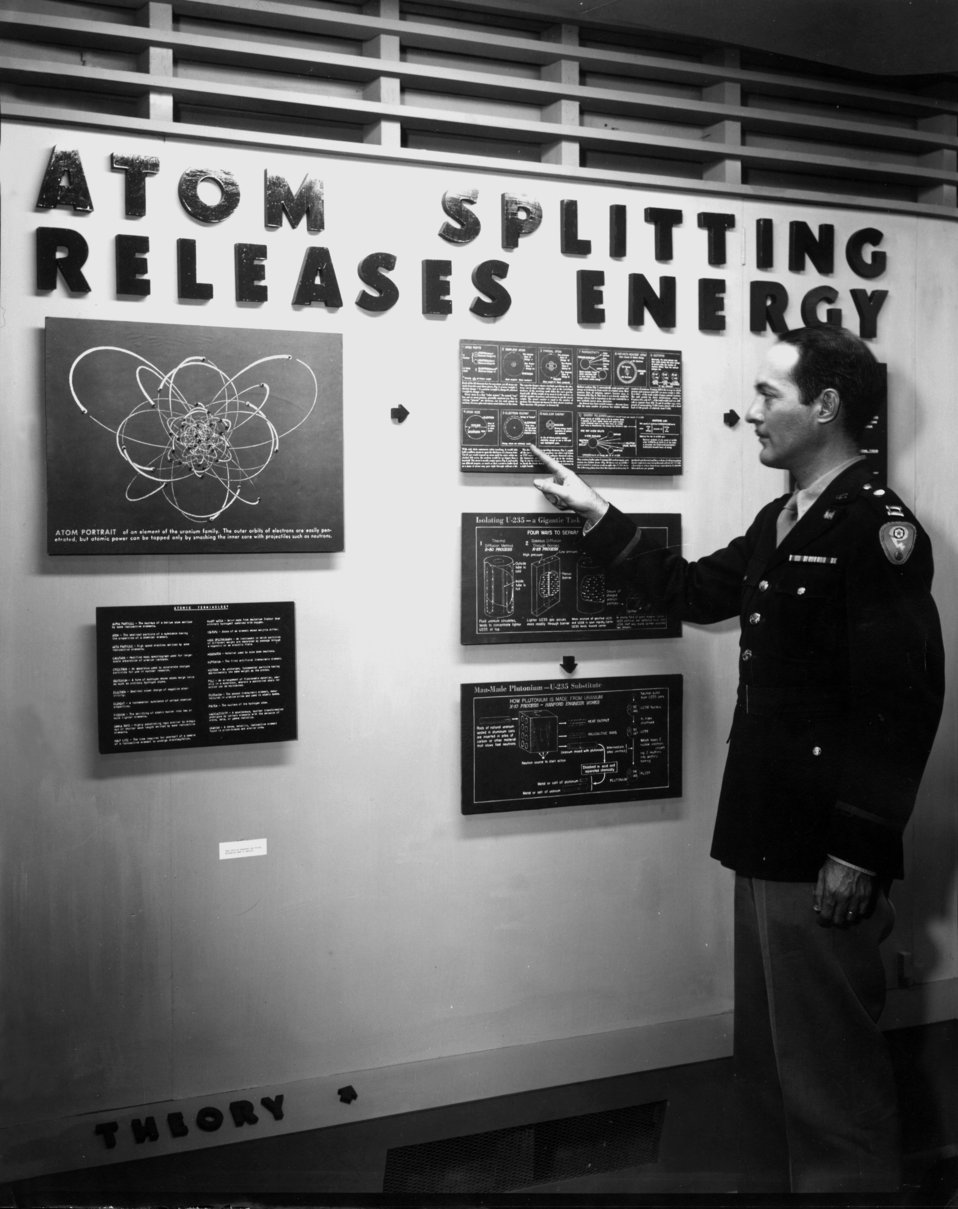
Capt. O'Sullivan Oak Ridge

S-369 DOE photo by Ed Westcott Capt. O'Sullivan Oak Ridge Tennessee 1944